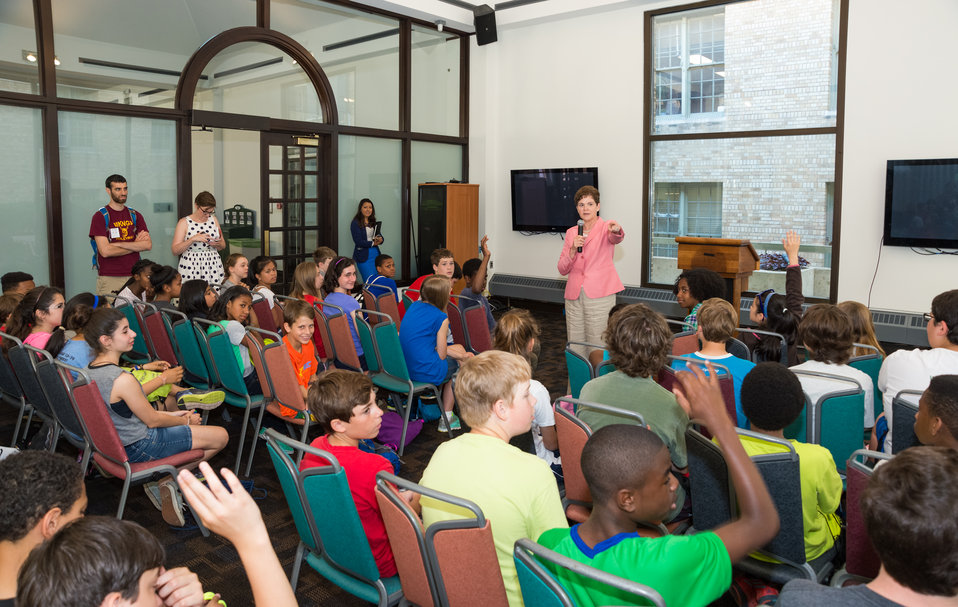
Agriculture Deputy Secretary Krysta Harden speaking with students from the Alice Deal Middle School, Washington, DC students during their visit to the United States Department of Agriculture (USDA) in Washington, DC, Wed. Jun. 4, 2014. The students studied hunger, food security, how to prevent hunger and organizations involved in solving hunger situations nationally and worldwide. A lot of what they learned is administered through the USDA.